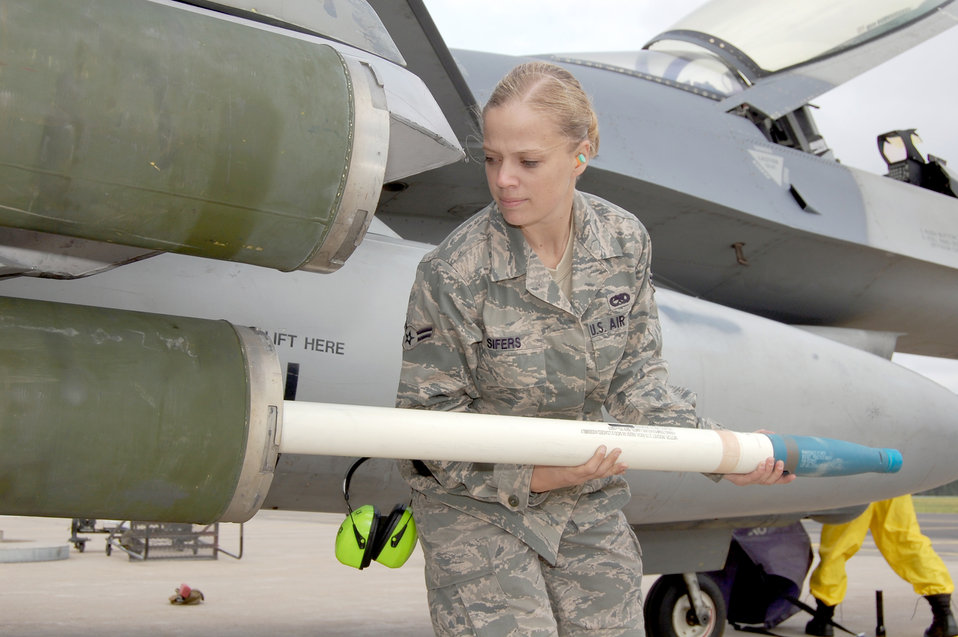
Fighting Falcons return from exercise in Sweden

Airman 1st Class Kelly Sifers loads a practice rocket onto an F-16 Fighting Falcon during a training exercise Aug. 4, 2010, at Kallax Air Base, Sweden. The 555th Fighter Squadron and 31st Aircraft Maintenance Squadron conducted more than 180 air-to-air and air-to-ground missions during a two-week exercise here working alongside members of the Swedish air force's Norrbotten Wing. Airman Sifers is a 31st Aircraft Maintenance Squadron weapons load crew member.